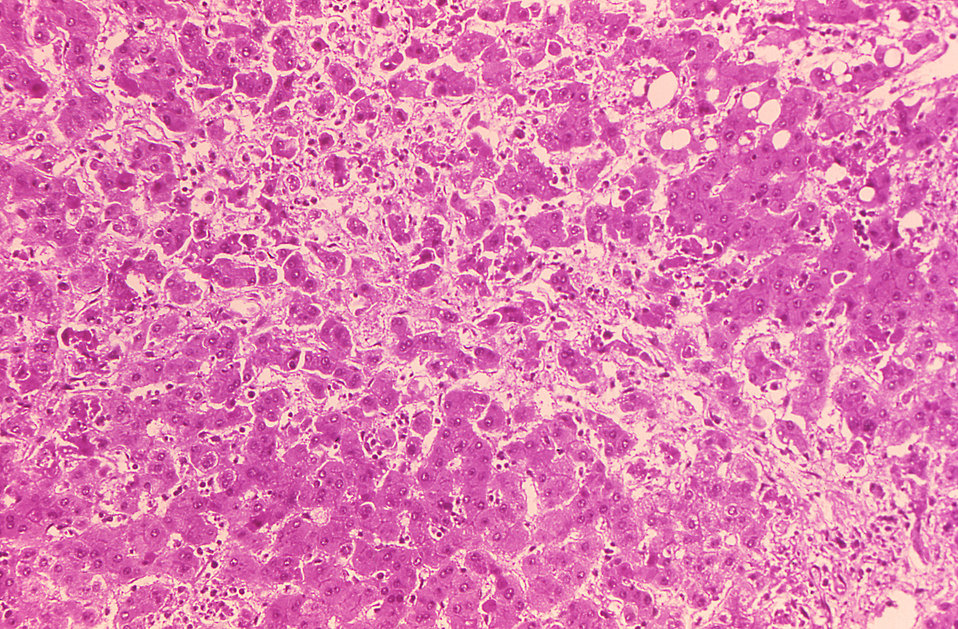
This is a photomicrograph of human liver tissue infected with Ebola virus, the cause of African Hemorrhagic Fever.